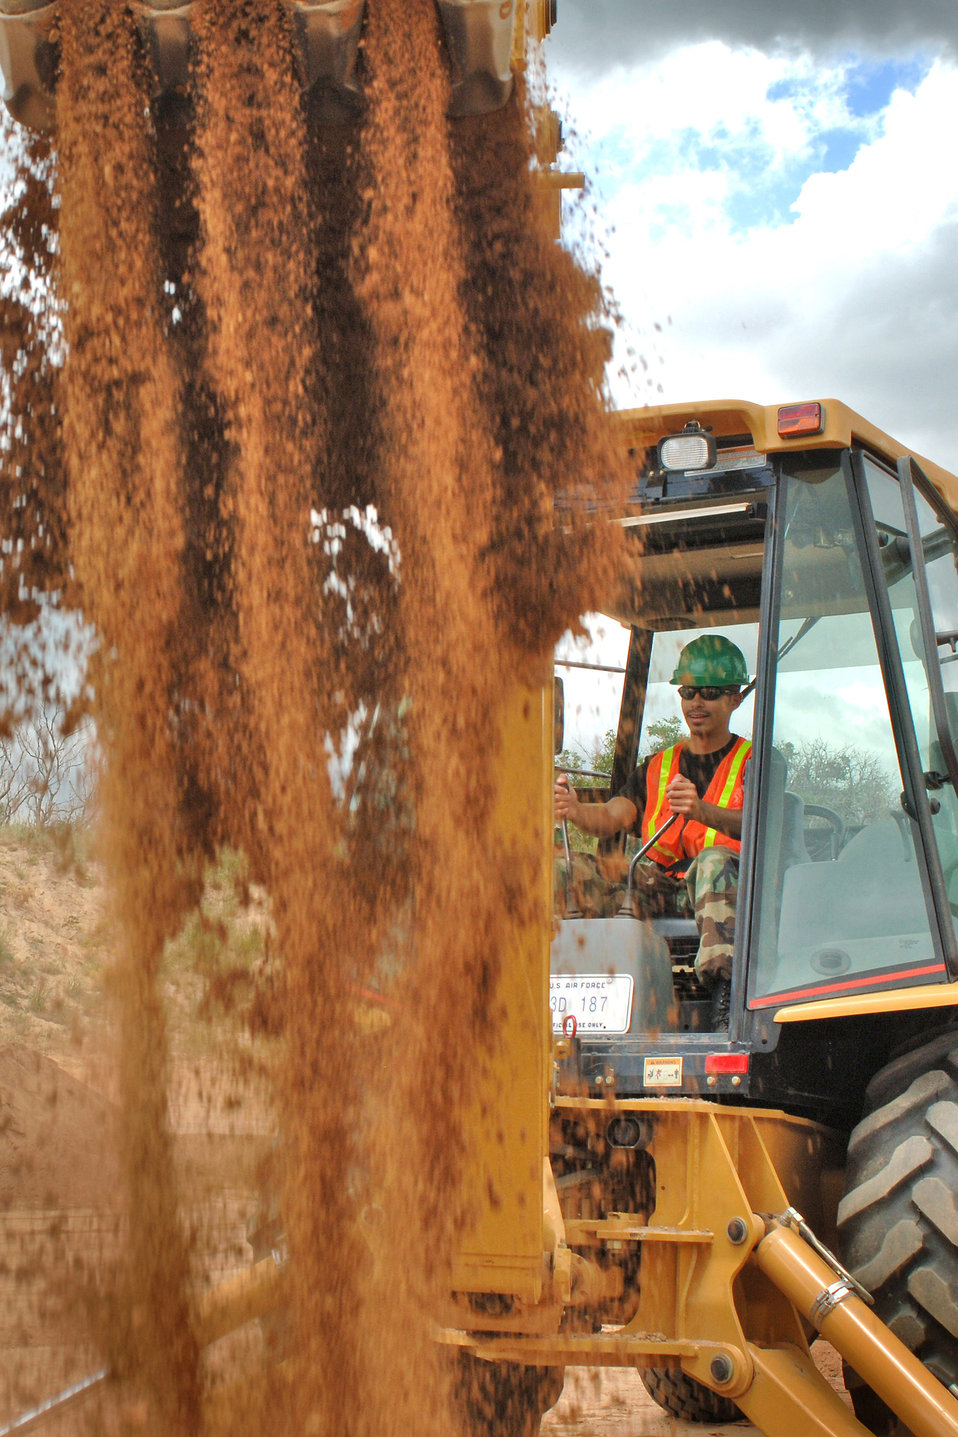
Summer lab gives cadets engineering experience

Cadet 1st Class Qais Al Jobour operates a backhoe during the Field Engineering and Readiness Laboratory course at the Academy. The course exposes cadets to several aspects of civil engineering, including heavy equipment operation, steel bridge construction, designing and pouring concrete beams and paving portions of a road.